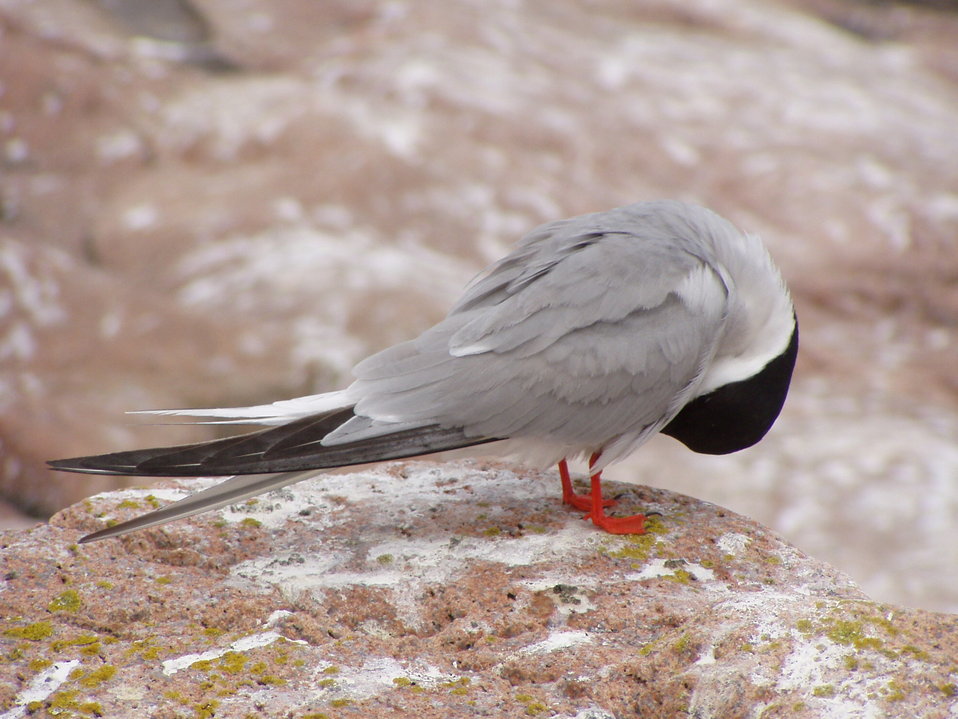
Common tern preening at Maine Coastal Islands National Wildlife Refuge